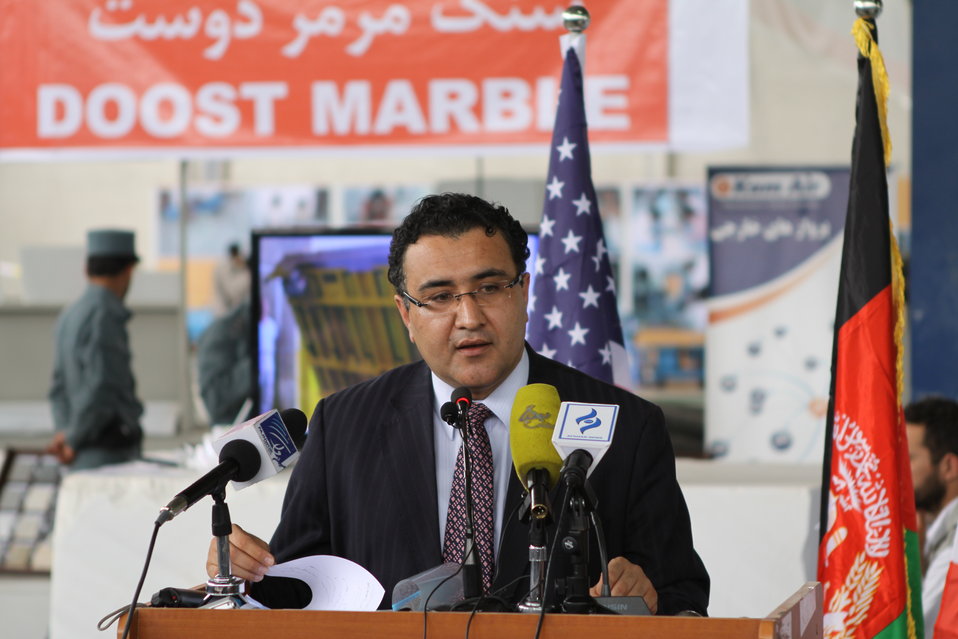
100525 Hirat Marble Conference 191